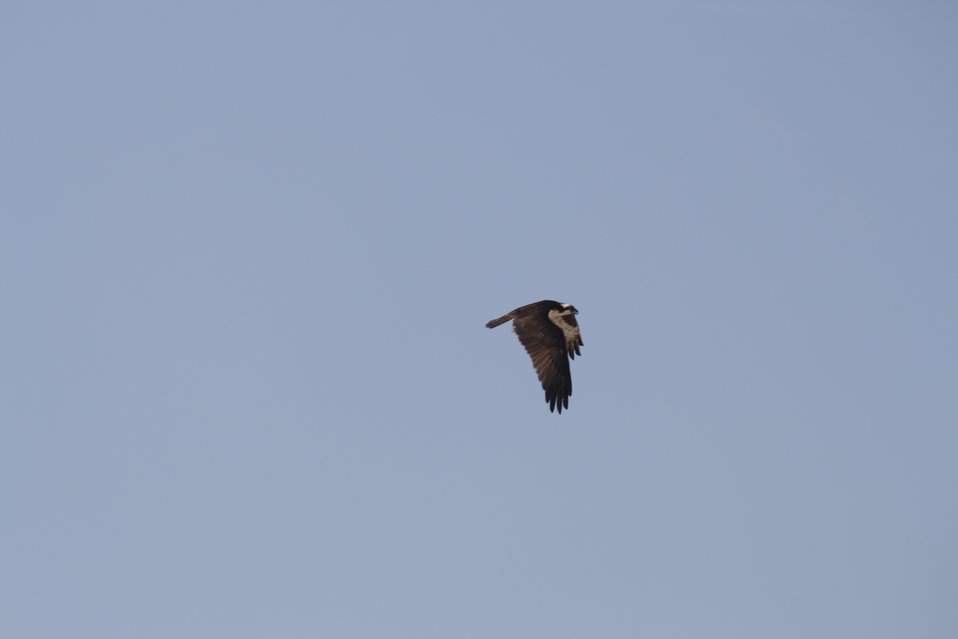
Bavon Beach project

Bavon Beach supports much wildlife, including the osprey pictured here.